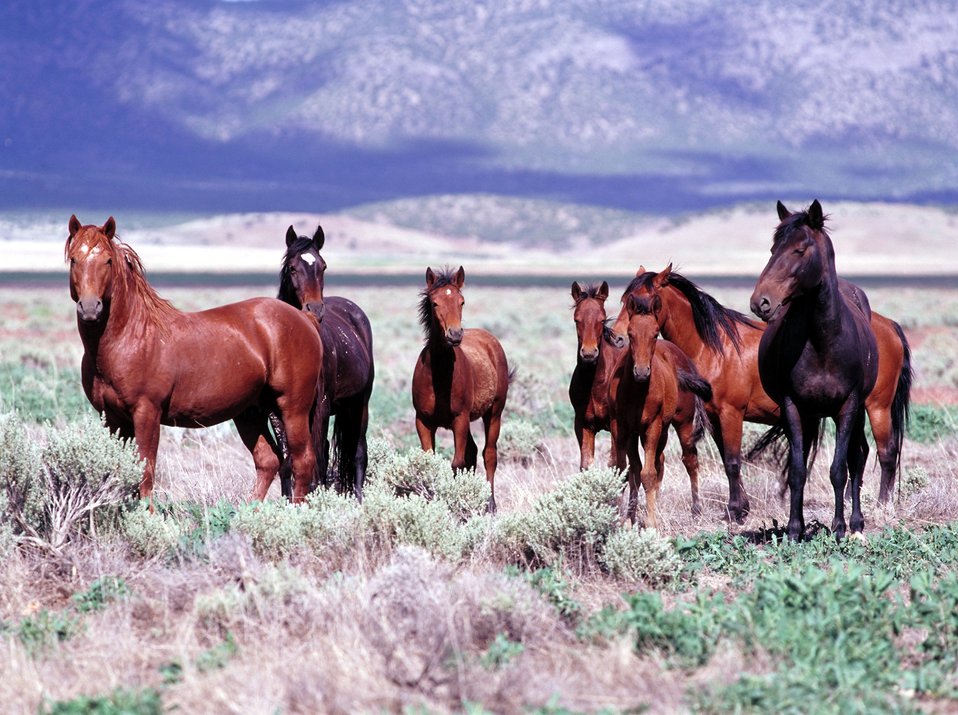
Onaqui Herd near Dugway, Utah.